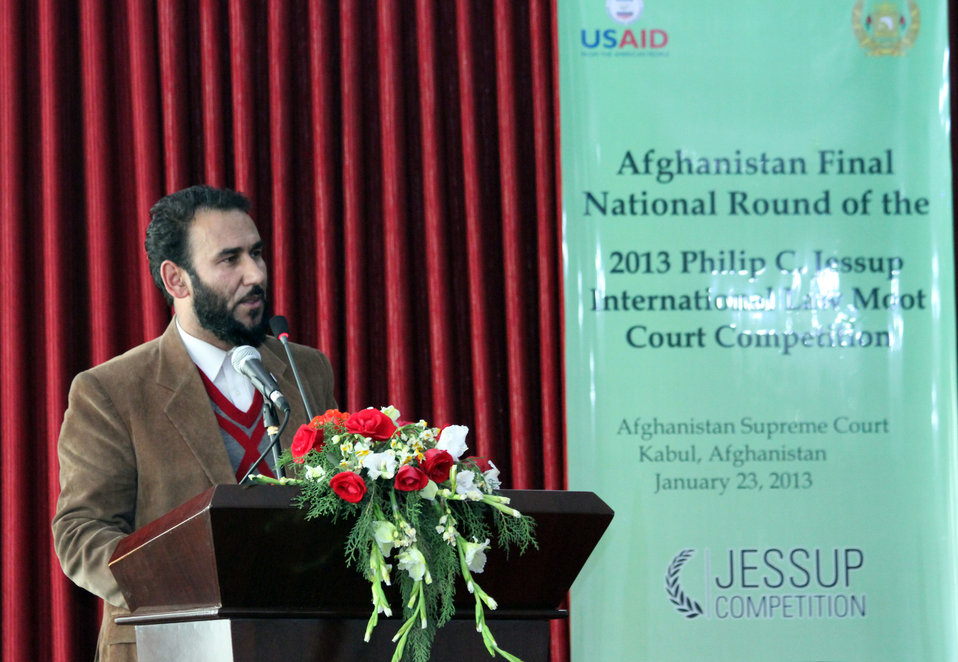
Afghanistan Final National Round of the 2013 Philip C.Jessup International Law Moot Court Competition